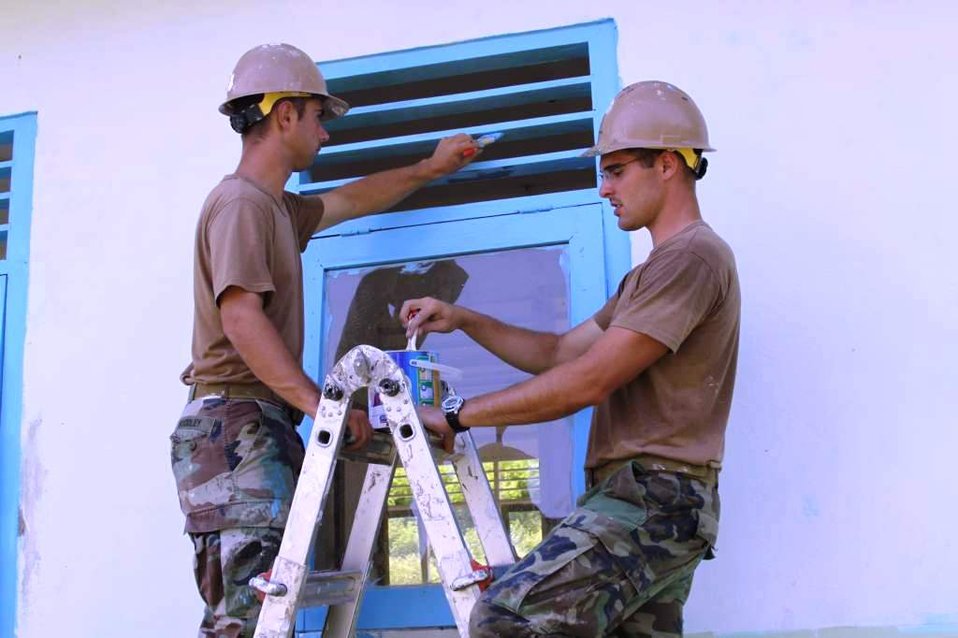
Builder 3rd Class Robert Woodley and Utilitiesman Anthony Sheffield Paint Window Trip on the In-Patient Ward of the Daruba Hospital Engineering Site

Builder 3rd Class Robert Woodley and Utilitiesman Anthony Sheffield, assigned to Naval Mobile Construction Battalion (NMCB) 11 out of Gulfport, Mississippi, paint window trim on the in-patient ward of the Daruba Hospital engineering site on July 12, 2010, in Morotai, Indonesia. The engineering project is part of Pacific Partnership 2010, the fifth in a series of annual U.S. Pacific Fleet humanitarian and civic assistance endeavors to strengthen regional partnerships.